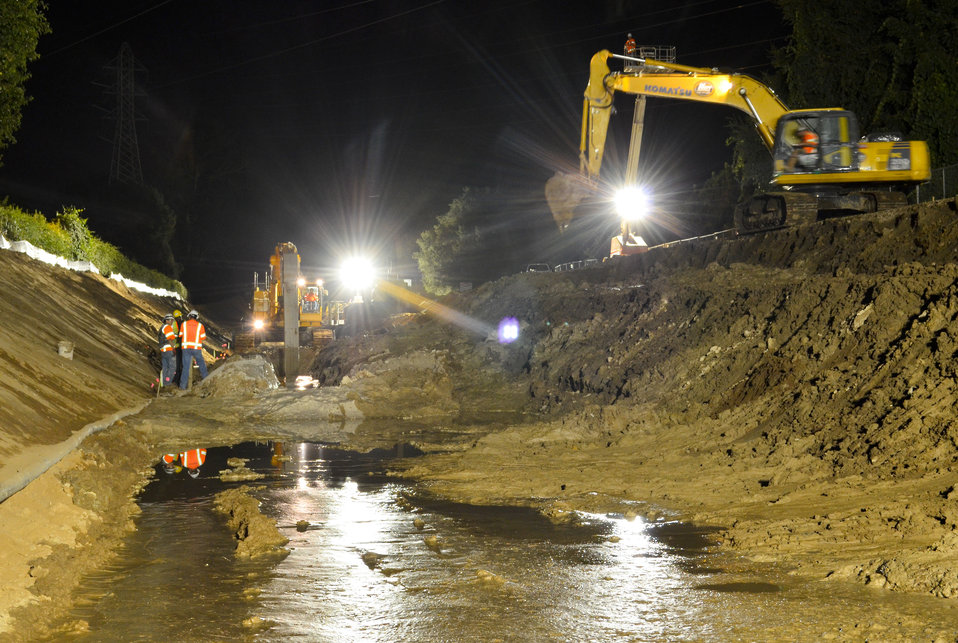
Seepage cutoff wall nighttime construction along the American River

Construction crews work in darkness--when energy demand is lowest--on a stretch of American River levee near the California State University-Sacramento campus Sept. 12, 2012 to close a 900-foot-long gap in a seepage cutoff wall underneath high power lines.
The Corps has built more than 20 miles of seepage walls into American River levees since 2000. Areas where construction was complicated by utilities, bridges or power lines were set aside for later construction.
The project is part of the American River Common Features project, a joint flood risk reduction effort between the Corps, the state’s Central Valley Flood Protection Board/Department of Water Resources and the Sacramento Area Flood Control Agency.